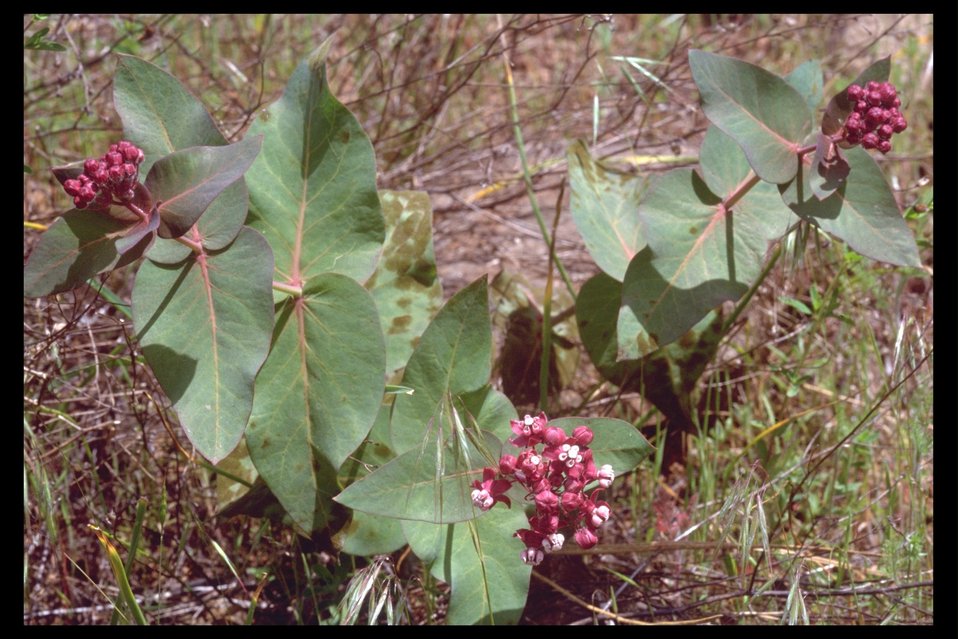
Purple Milkweed (Asclepias cordifolia) near Lost Creek Lake.